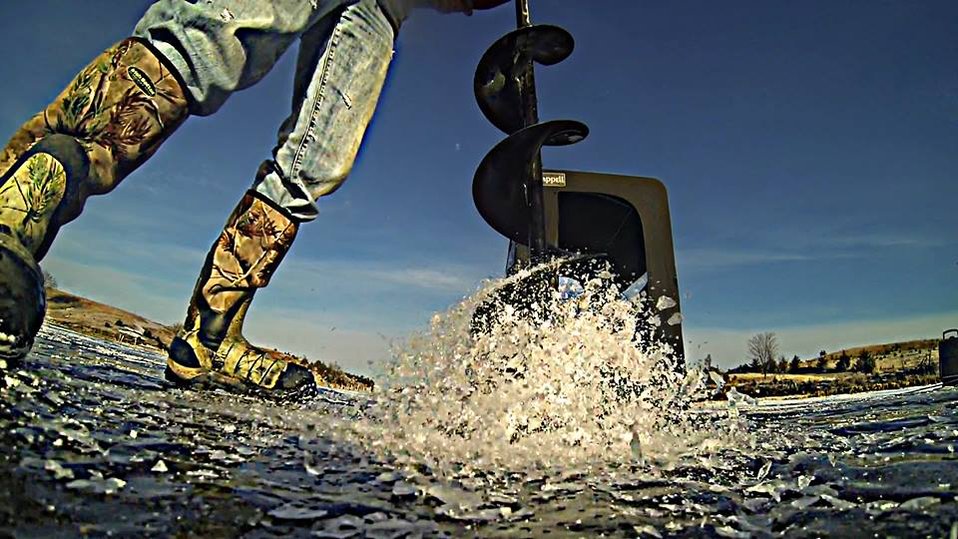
Fishing License

Remember South Dakota anglers, fishing licenses expire at the end of every January.